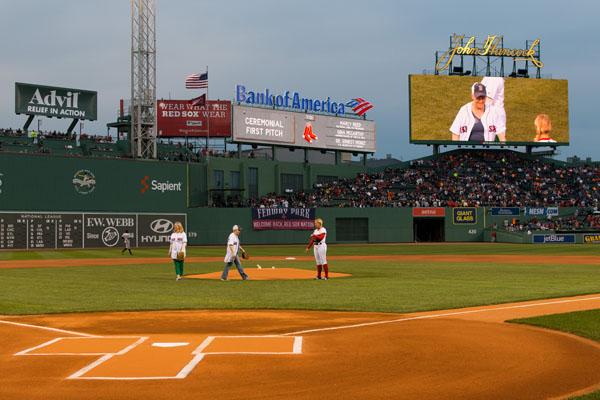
Day in the Life - Earth Day, April 22, 2014

7:01 pm – Taking the mound, with the famed Green Monster in the background. (11/12)